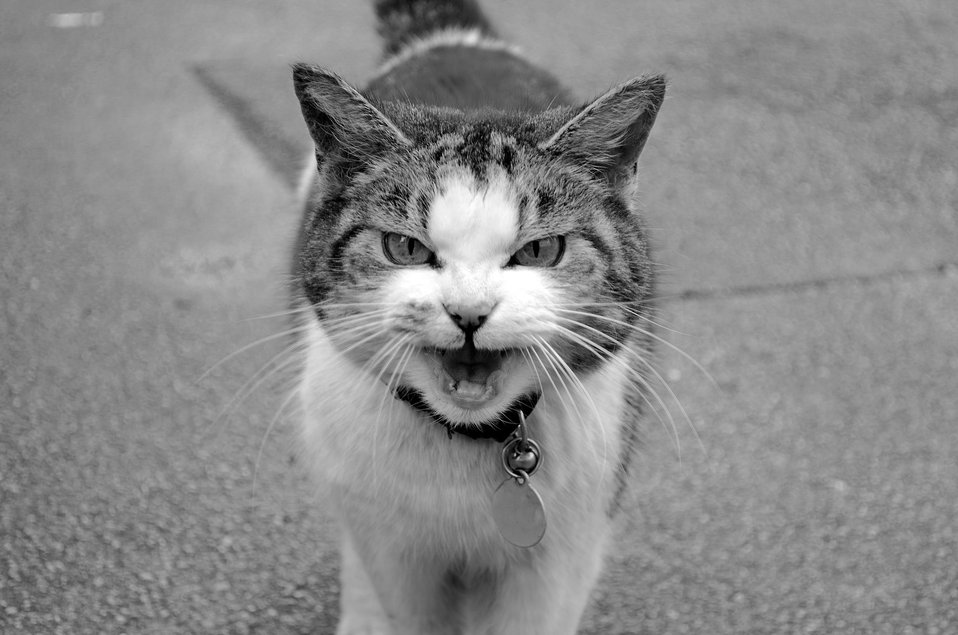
Cat - background.